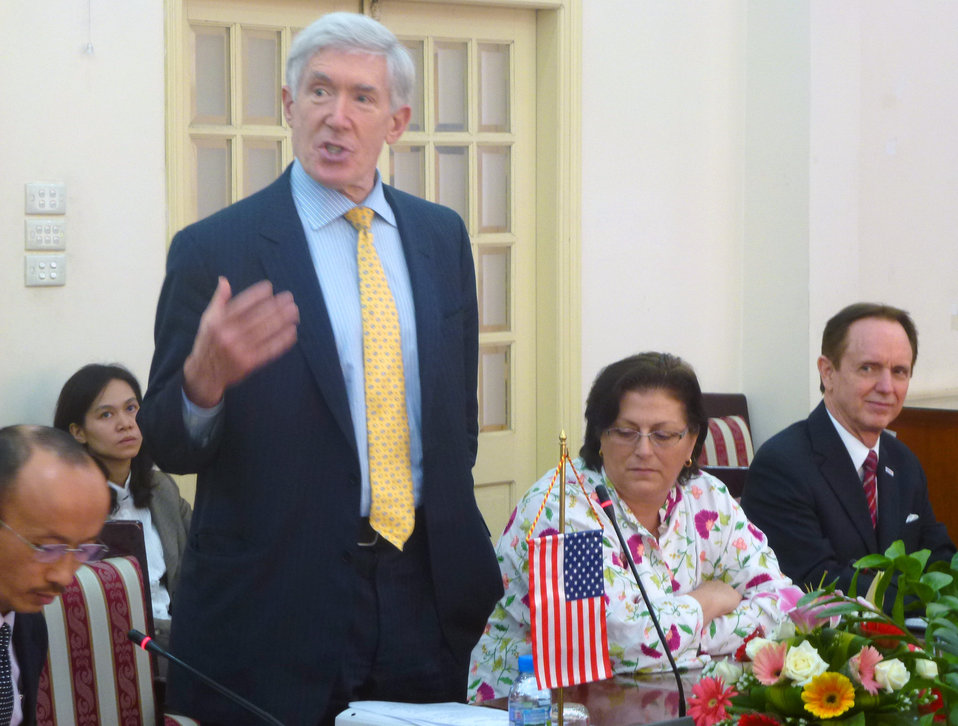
U.S.-U.S. Under Secretary of State Robert Hormats